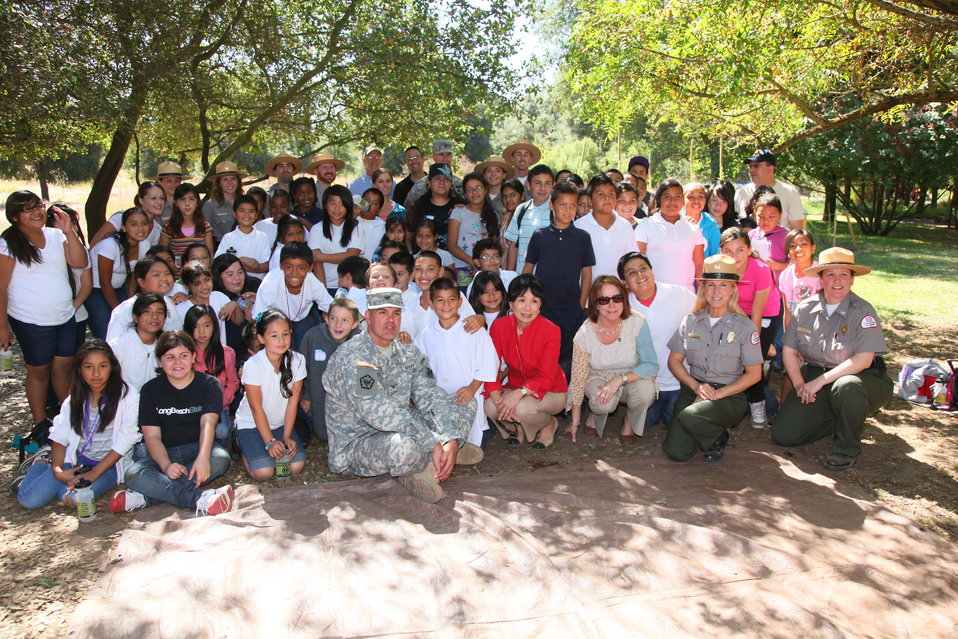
America’s Great Outdoors event at the Effie Yeaw Nature Center

Students from Maple Elementary School take a break for a photo with Assistant Secretary of the Army for Civil Works, Jo-Ellen Darcy (front row, second from right), U.S. Rep. Doris Matsui (to Darcy’s right) and U.S. Army Corps of Engineers leaders and park rangers at the Effie Yeaw Nature Center in Carmichael, Calif., Sept. 27, 2011. Corps park rangers led the students on nature walks and outdoor education activities in support of President Barack Obama’s America’s Great Outdoors Initiative, established in April 2010, to reconnect the American people with the outdoors. 'Today was all about connecting kids with nature,” said Col. Bill Leady, commander of the U.S. Army Corps of Engineers Sacramento District (front row, left), which hosted the event. ”Being outdoors is so important; not just for our health, but for understanding the natural world that we belong to. We all have a responsibility to help protect it, and as the nation's environmental engineers, it's important for us to share that message,' he said.